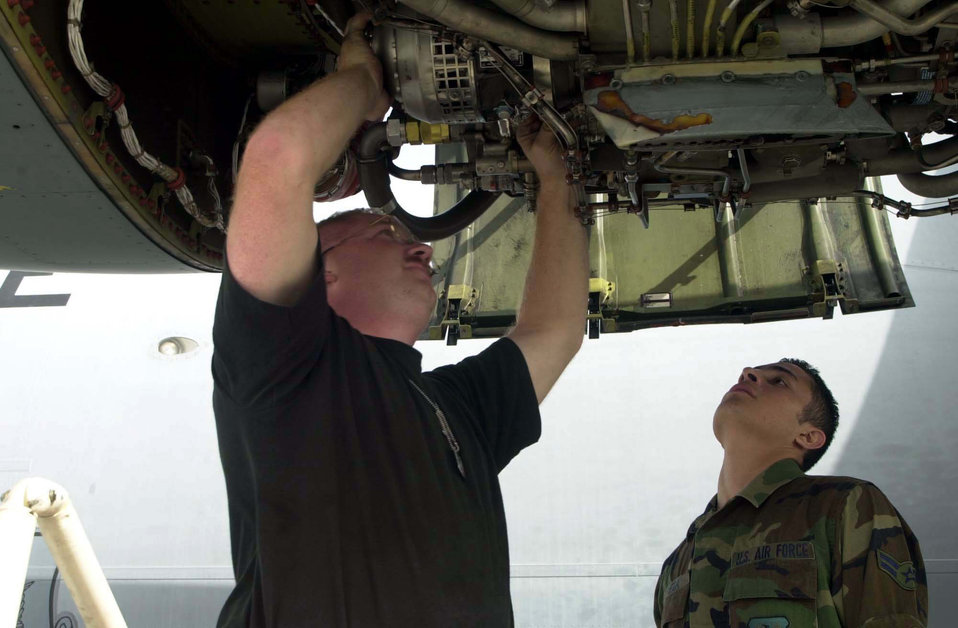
Starter motor

NAVAL AIR STATION SIGONELLA, Italy -- Staff Sgt. Matthew Allen (left), and Airman 1st Class Luis Norieg, crewchiefs from 437th Aircraft Generation Squadron at Charleston Air Force Base, S.C., work on installing a starter motor in a C-17A Globemaster III recently. The aircraft will be carrying troops and cargo to forward locations in support of Operation Enduring Freedom